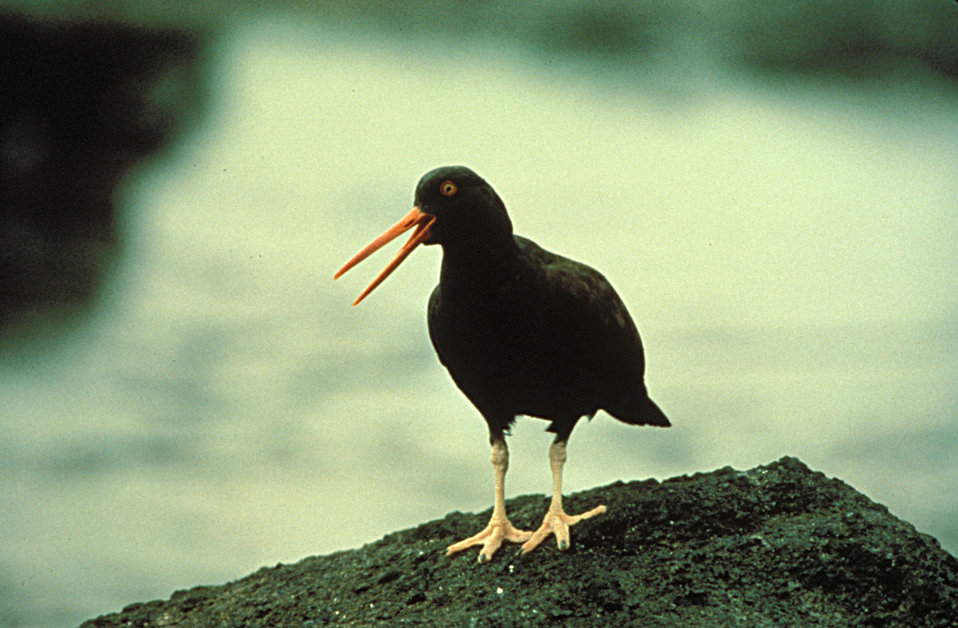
Black oystercatcher

Close view of bird standing on rock